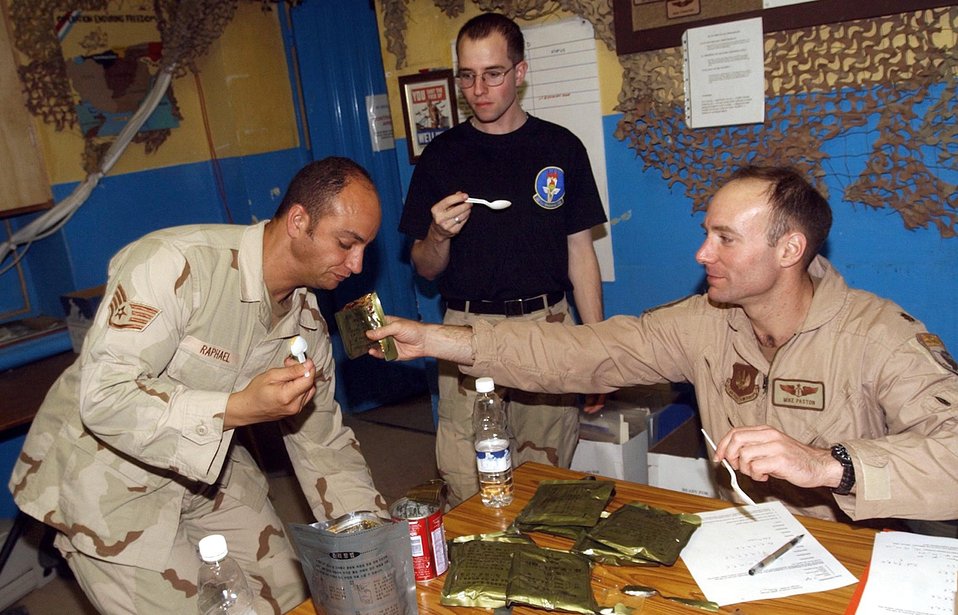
Taste test

BAGRAM AIR BASE, Afghanistan -- Maj. (Dr.) Michael Paston offers a Thai ration to Staff Sgt. Brian Raphael, who sniffs it skeptically, while Senior Airman Brian Miller waits his turn. Their inputs about the ration will be recorded and used in Paston's research. Paston, Raphael and Miller are assigned to the 455th Expeditionary Operations Group here.